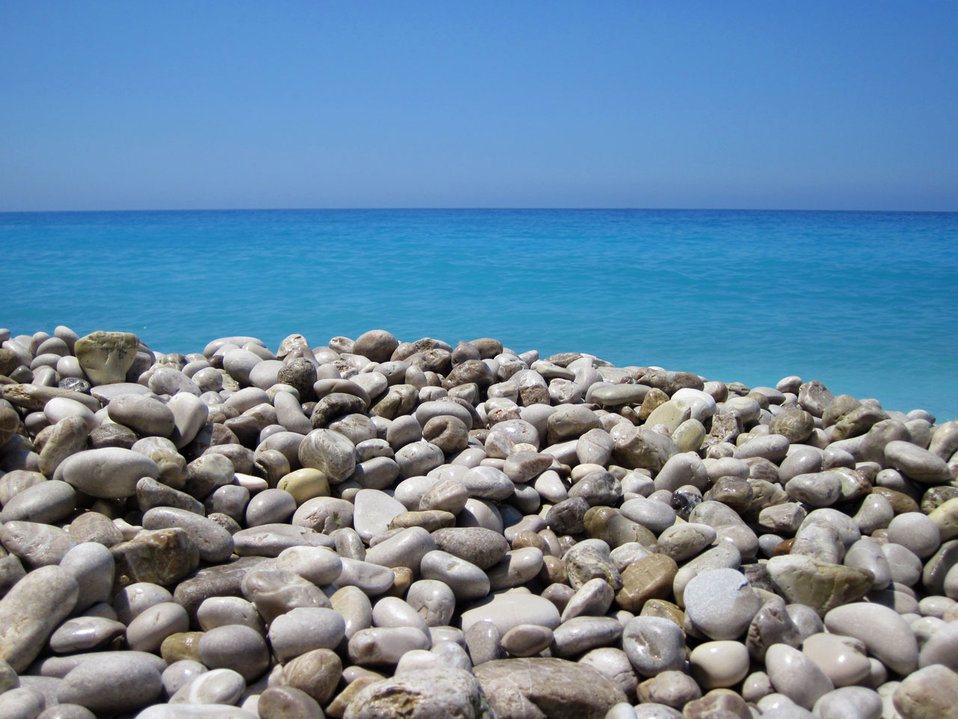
Pebbles and sea

Pebble beach with blue sea in the background.